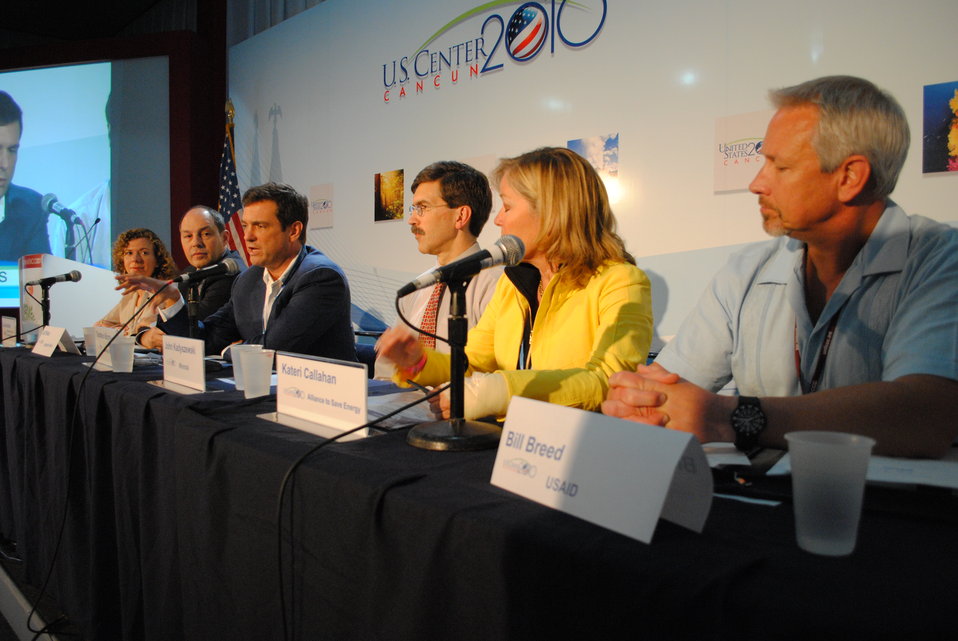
Panelists Respond to Questions

Panelists on the panel, USAID-CT PFAN: Facilitating Clean Energy Finance and Technology Transfer for Developing Countries, respond to questions from the audience at the U.S. Center at COP-16 in Cancun, Mexico, on December 7, 2010.